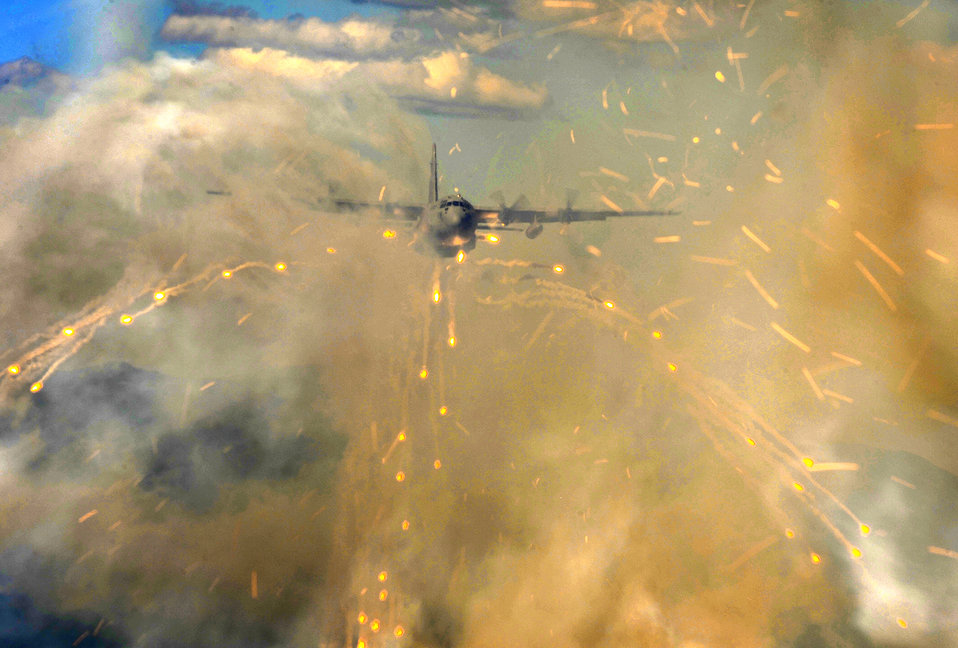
Light up the sky

A 36th Airlift Squadron C-130H Hercules from Yokota Air Base, Japan, deploys flares over Alaska June 23, 2010, as part of a training exercise during Red Flag Alaska.